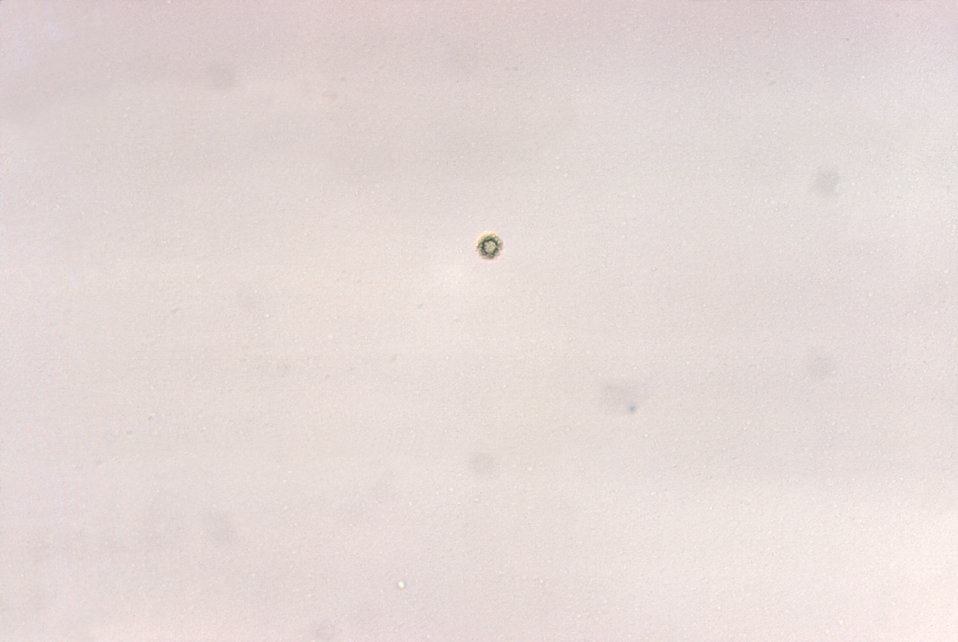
Magnified 125X, this photograph revealed some of the morphologic features exhibited by a single, large-sized Ureaplasm urealyticum colony, otherwise known as T-strain mycoplasma. Unlike the heavy colonial growth seen in PHIL 10930 through 10933, these organisms produced only sparse growth on 1ml agar.